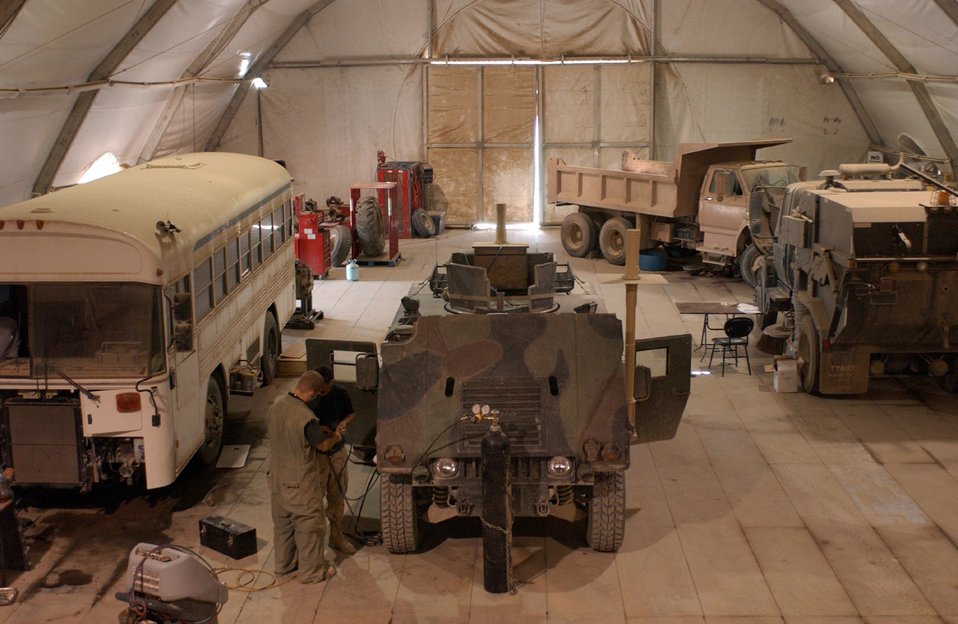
Mechanics keep war effort rolling

BAGHDAD, Iraq -- Grease and grime are unavoidable in the 447th Expeditionary Logistics Readiness Squadron's vehicle maintenance facility here. Every day an ever-changing line of trucks, buses, Humvees and other vehicles can be found waiting their turn for repair.